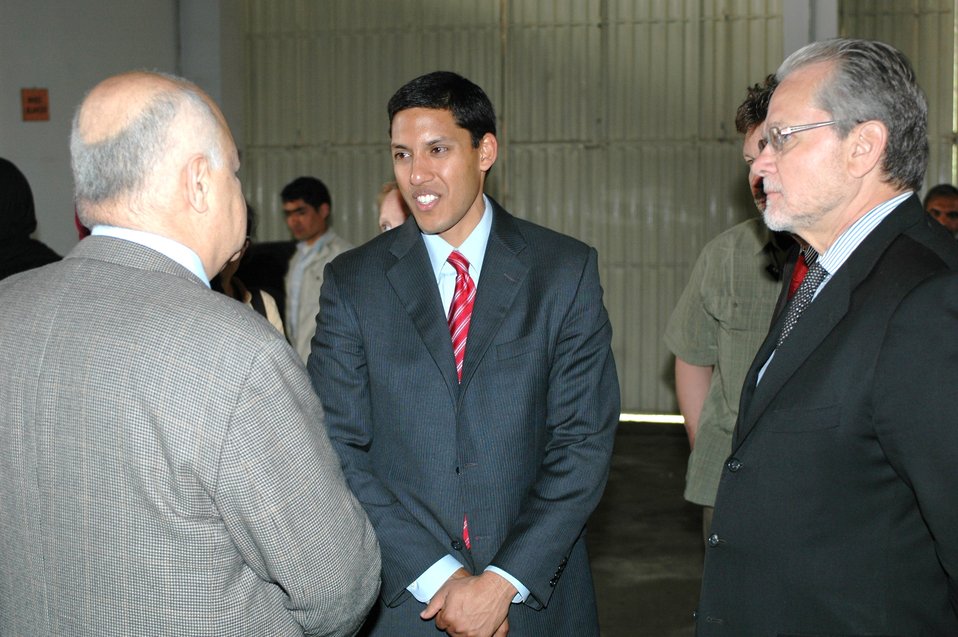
Dr Shah Visits Votech in Kabul